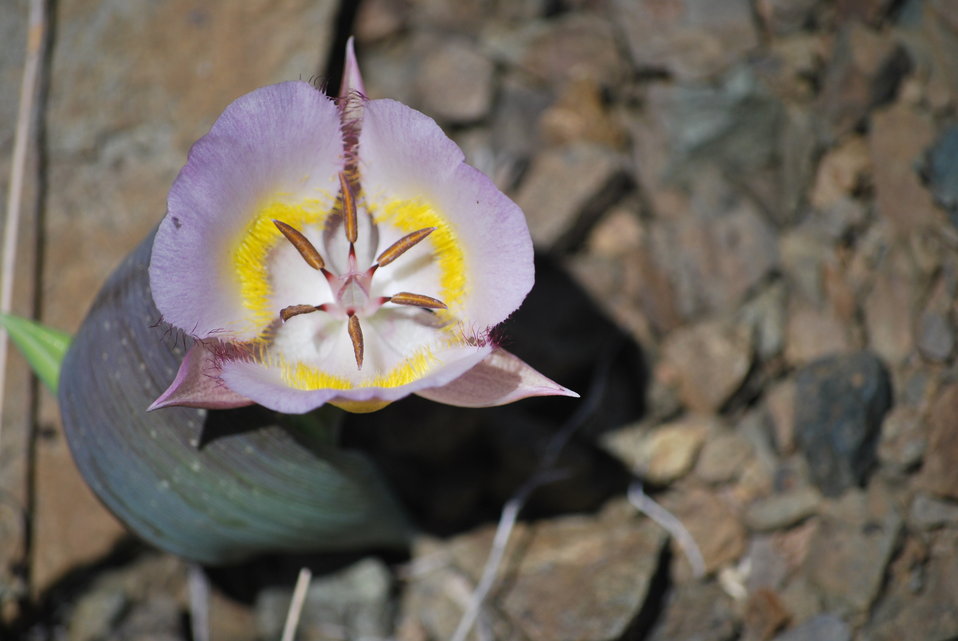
Siskiyou Mariposa Lilly

A candidate species for Endangered Species Act protection, the Siskiyou mariposa lily occurs in three locations in northern California and southern Oregon